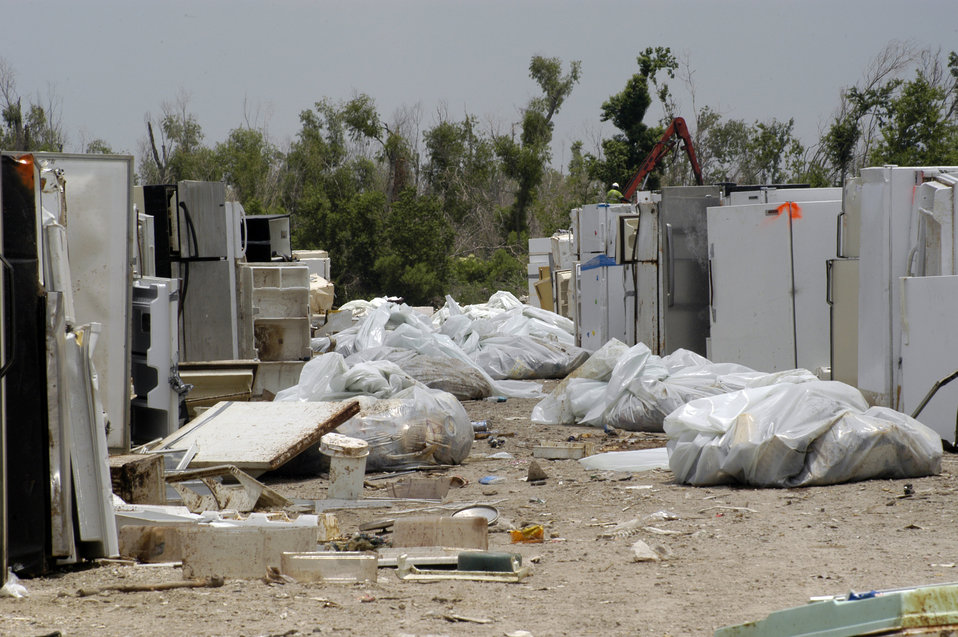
Thousands of refrigerators and freezers (White Goods) had to be disposed of in an environmentally directed manner. The “White Goods” had to have months old rotten food removed from the units and disposed of at a compost site. The Freon needed to be drained from the motors and sent to an environmental disposal site for toxic waste. The shells of the “White Goods” could then be sent to a metal recycling plant. An interesting anecdote for this site was the director was a veteran with no sense of smell, which was a great asset in managing this particular project. Katrina made landfall on Monday morning, August 29, 2005 as a Category 3 hurricane with sustained winds of 125/mph with over a 20-foot storm surge. Katrina caused catastrophic damage over 90 thousand square miles across Louisiana with an estimated $75 billion dollars in damage. The total economic impact to the Gulf Coast was estimated at over $150 billion. 80% of New Orleans, LA, was underwater with some areas more than 20 feet deep. Less than a month later southern Louisiana was struck by a second Category 3 hurricane Rita inflicting more damage in the southwestern areas of Louisiana adding an addition $12 billion worth of damage to the already beleaguered state. The U. S. Army Corps of Engineers (USACE) under the auspices of Federal Emergency Management Agency (FEMA) was the lead service in providing assistance to the citizens of Louisiana. The U.S. Department of Agriculture (USDA) supplied emergency food aid, emergency loan assistance to farmers and home owners, and USDA personnel from around the nation volunteered their time and muscle to aid in the recovery operations.